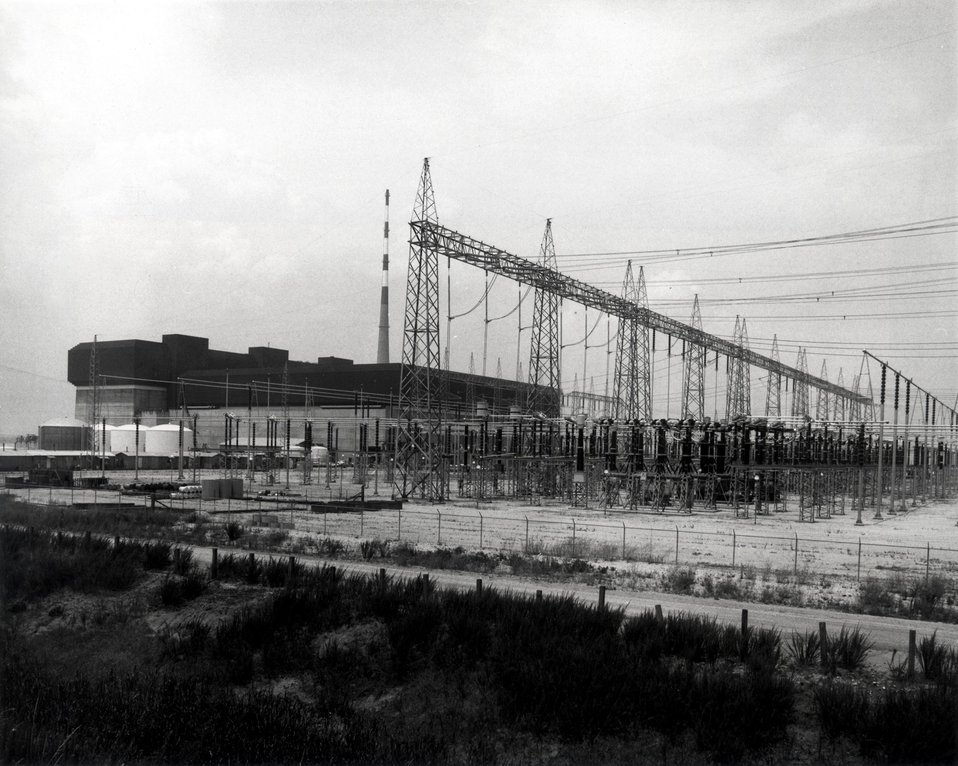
Tennessee Valley Authorities Browns Ferry Nuclear Plant located on Wheeler Lake near Decatur, Alabama. Circa 1975.